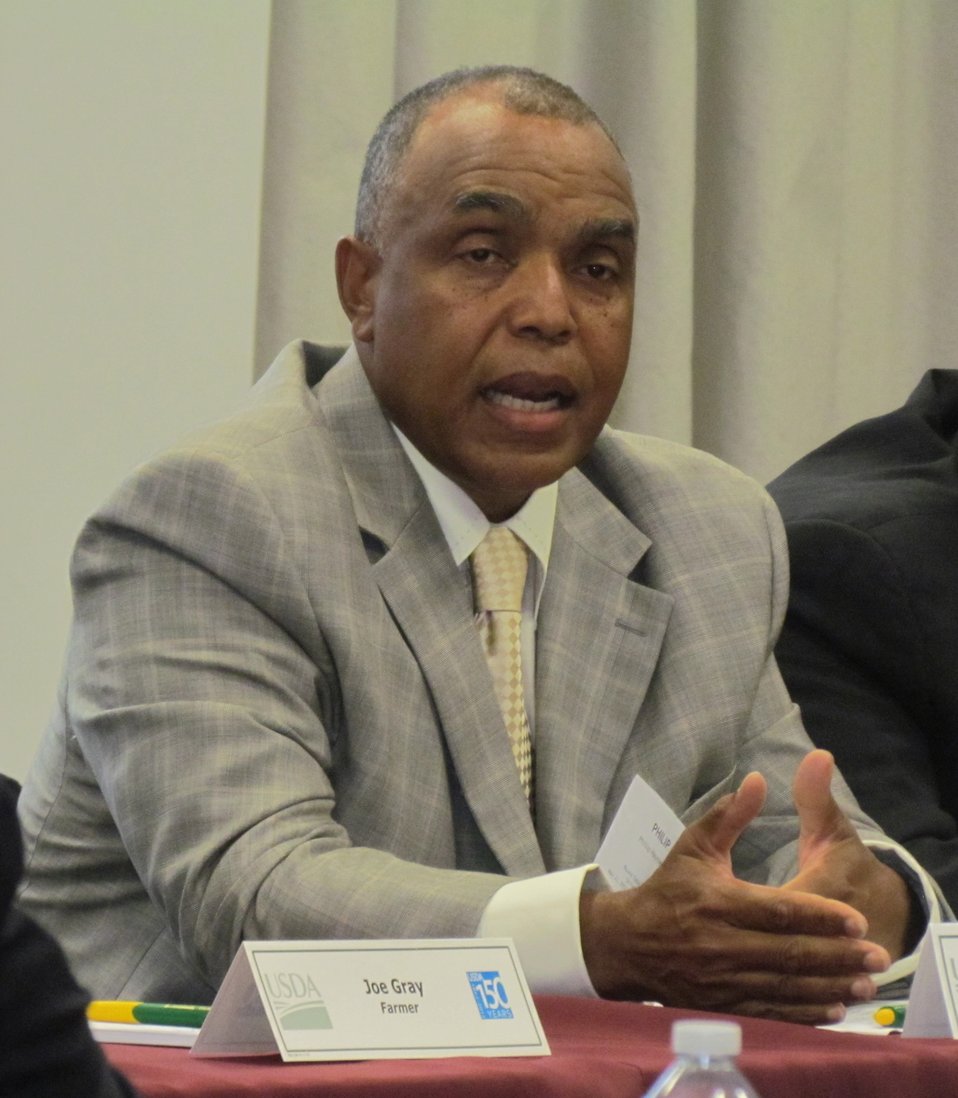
Virginia farmer Philip Haynie, II, poses a question during the roundtable discussion with a group of farmers and ranchers producers in Richmond, VA., on Wednesday, May 23, 2012.USDA photo by Barbara Bowen.
.